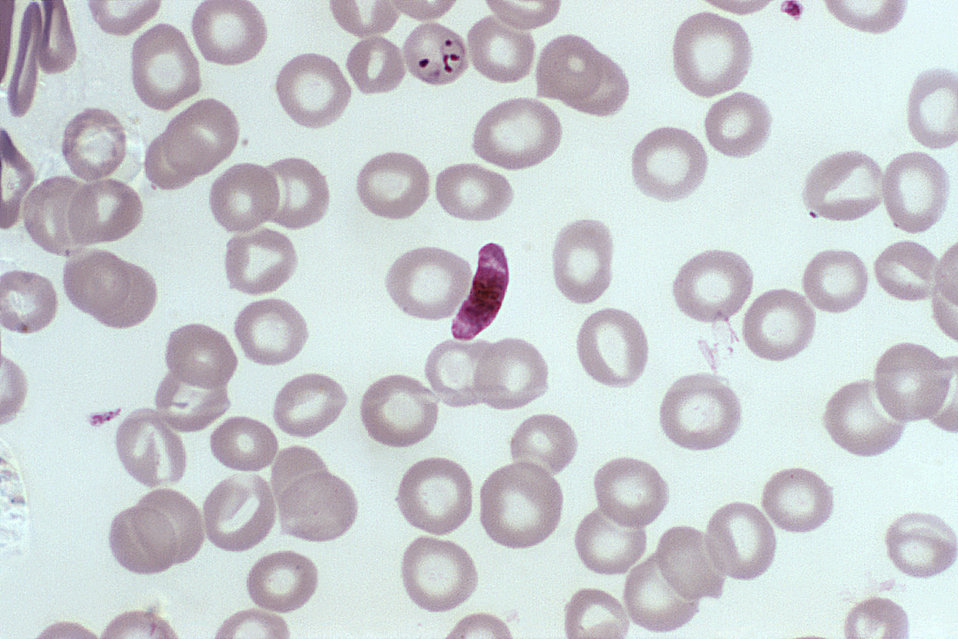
This is a micrograph of a blood smear containing a microgametocyte of the parasite Plasmodium falciparum.